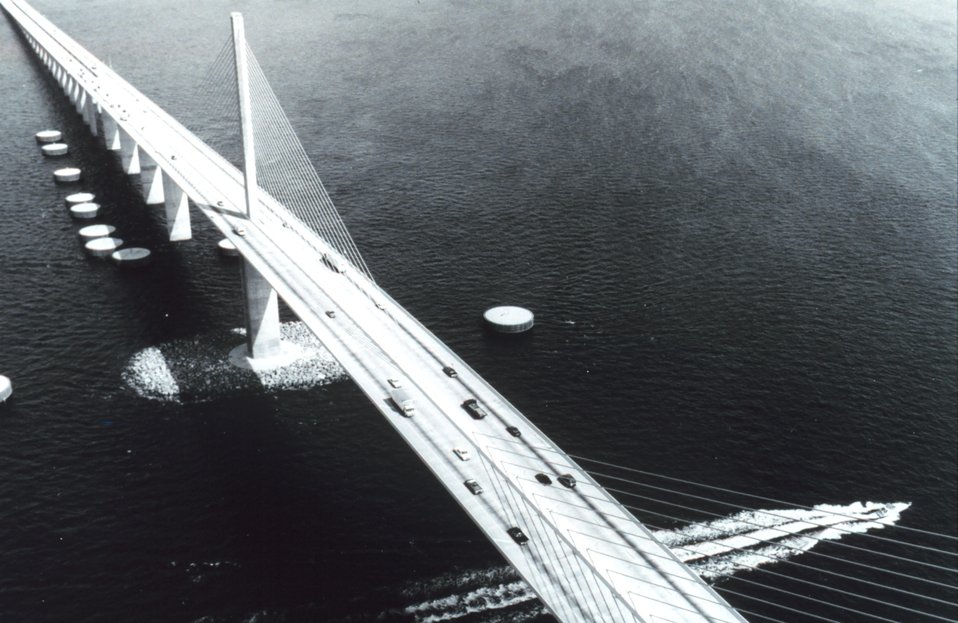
The Sunshine Skyway Bridge